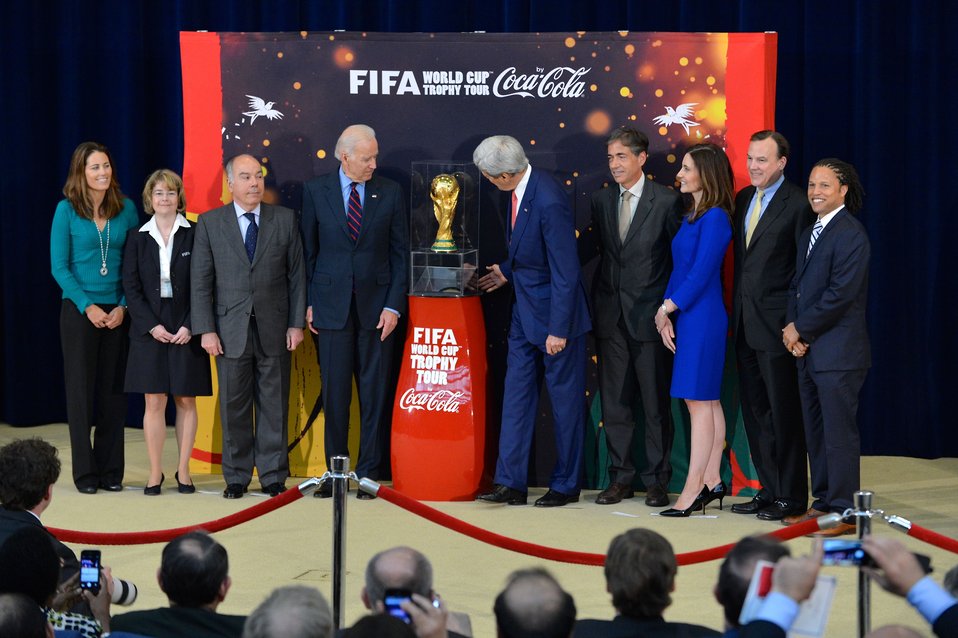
Vice President Biden and Secretary Kerry Unveil the FIFA World Cup Trophy

Vice President Joe Biden, U.S. Secretary of State John Kerry, Assistant Secretary of State for Educational and Cultural Affairs Evan Ryan, Sports Envoys Julie Foudy and Cobi Jones, and representatives of FIFA, Coca-Cola, and the Brazilian Government unveil the FIFA World Cup trophy during the FIFA World Cup Trophy Tour by Coca-Cola at the U.S. Department of State in Washington, D.C., on April 14, 2014.